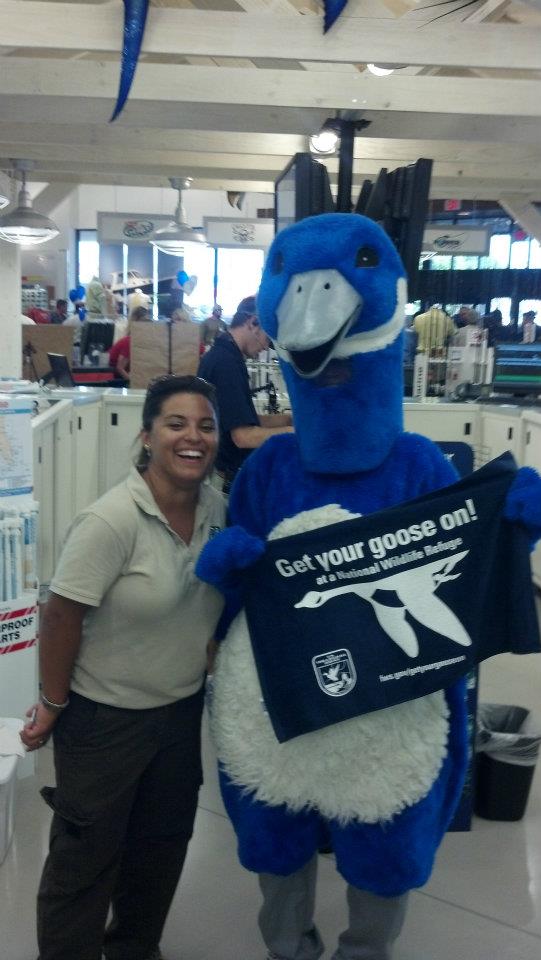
Get Your Goose On!